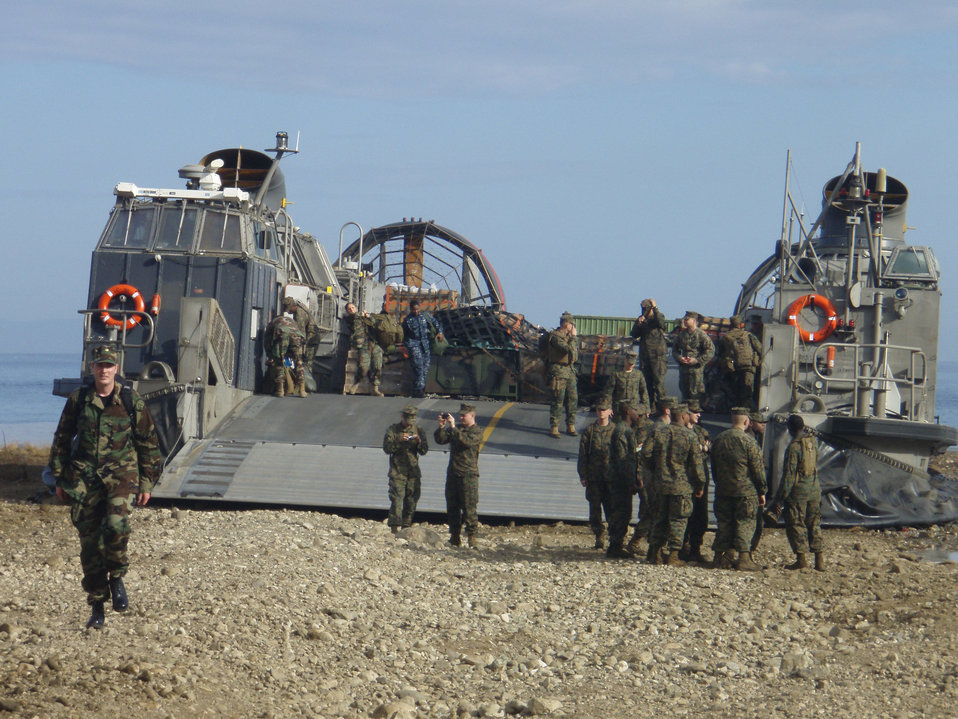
This image depicts a maritime transport vehicle known as a Landing Craft Air Cushion, or LCAC, which had been used to transport United States Public Health Service (USPHS) officers and much needed supplies from the USS Bataan on to this Haitian beach soon after the country's devastating January, 2010 earthquake.